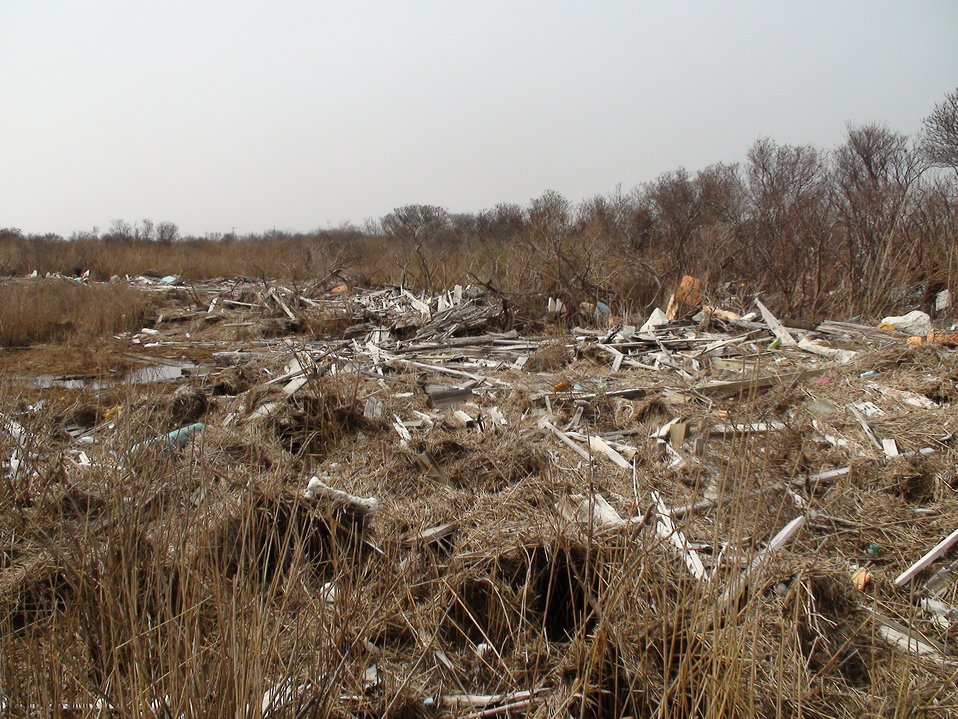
Debris at Lido Beach Wildlife Management Area

These damages were caused by Hurricane Sandy.